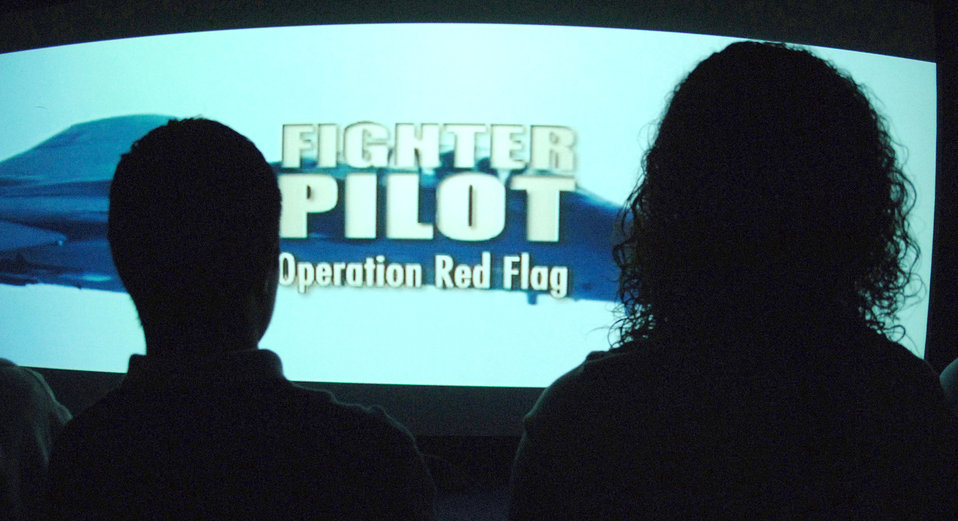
AF Recruiting

High school students watch a video about joining the Air Force during a recruiting event Tuesday, April 4, 2006 at a San Antonio high school. The event had video games and a semi-trailer with a short video shown inside about career opportunities and experiences in the Air Force.